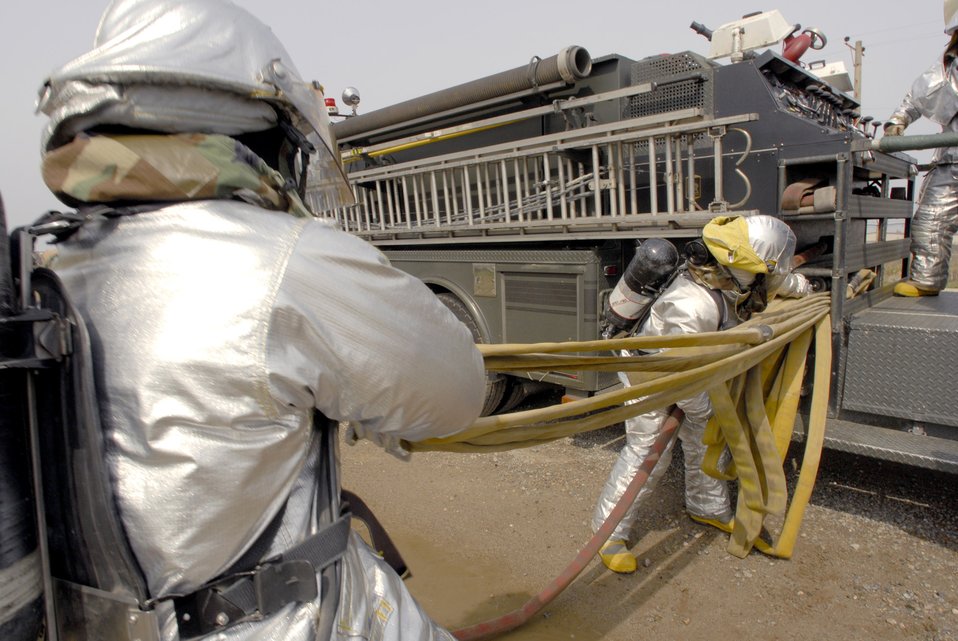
Into the fire

Firefighters from the 8th Civil Engineer Squadron respond to a simulated fire during an operational readiness inspection April 17 at Kunsan Air Base, South Korea. Kunsan AB is currently undergoing an operational readiness inspection to test the 8th Fighter Wing's ability to conduct its wartime mission.